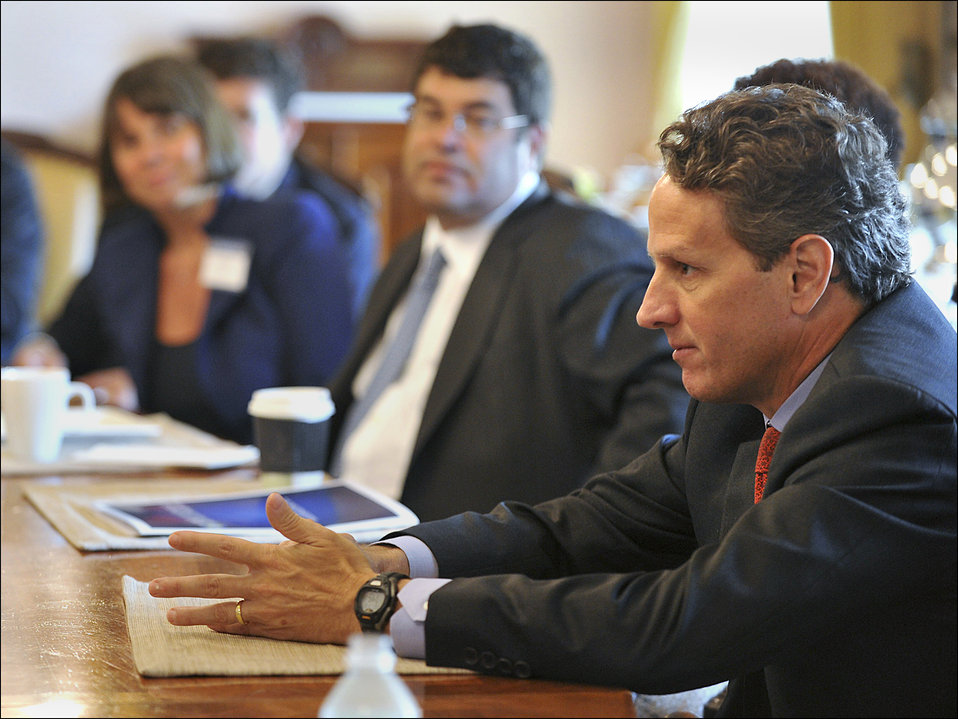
Women in Finance Investment Symposium

Secretary Tim Geithner and Deputy Secretary Neal Wolin and senior Treasury officials hosted a breakfast for panelists before the symposium.